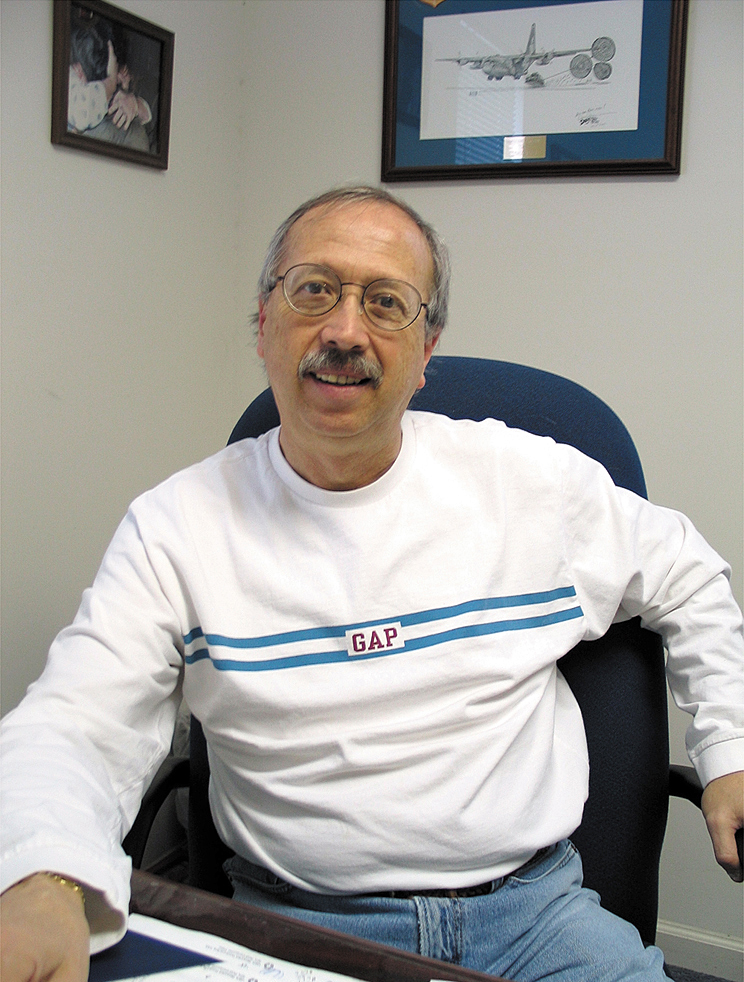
Base recalls teamwork following ramp horror

POPE AIR FORCE BASE, N.C. -- Retired Senior Master Sgt. Eric Truesdale recalls the tragic events of March 23, 1994. He helped with recovery efforts after an F-16 Fighting Falcon hit the tarmac in front of a C-141 Starlifter killing 24 Soldiers and injuring more than 100 others.